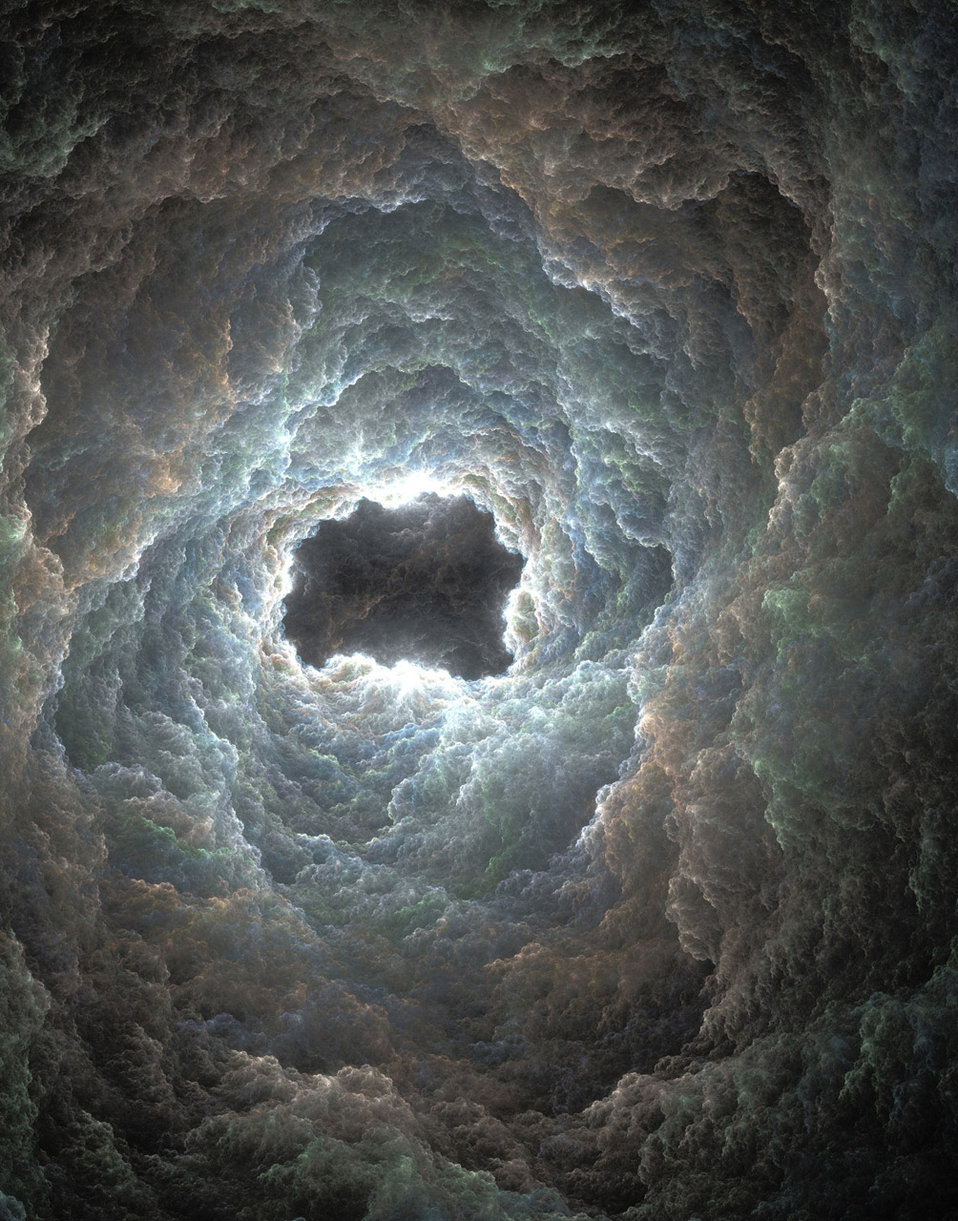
Heavenly ambiance

A beautiful depiction of what my interpretation of being lifted to heaven.